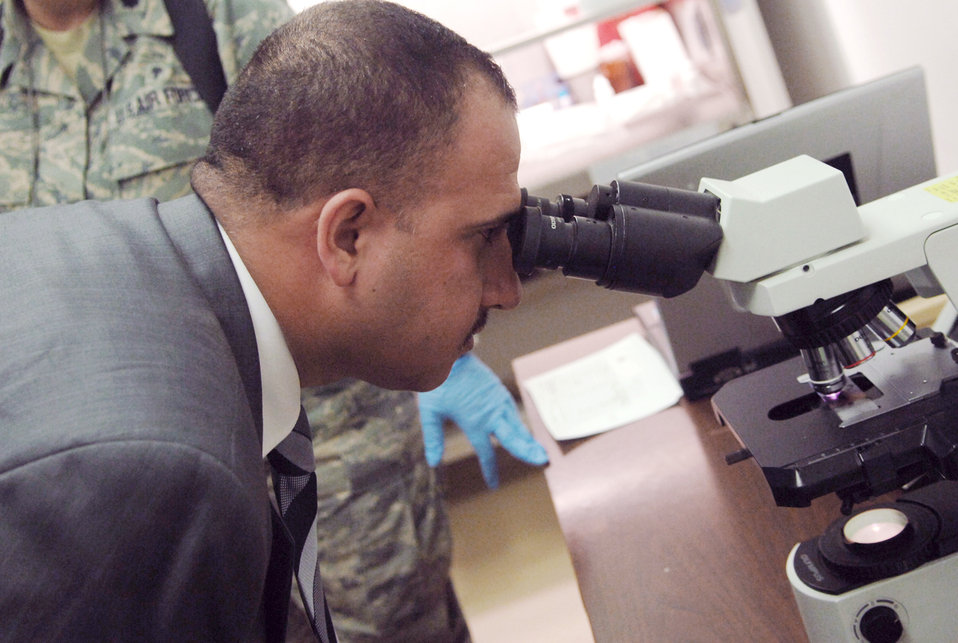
Iraqi official tours Joint Base Balad medical facilities

Iraqi Salah Ad Din Province Deputy Governor Ahmed al-Krayem views a sample through a microscope at the Air Force Theater Hospital's laboratory Aug. 5 at Joint Base Balad, Iraq. The Iraqi dignitary visited the AFTH and the Sgt. Ivory L. Phipps Clinic here to gather ideas for improving health care for his constituents.